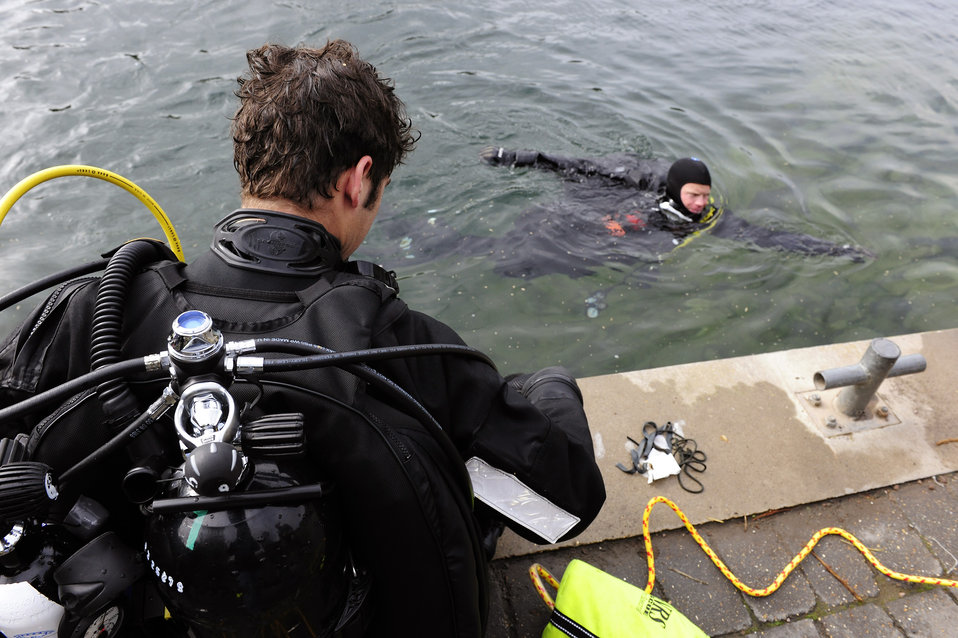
Pararescuemen train to save lives

Pararescuemen from the 56th Rescue Squadron train for subsurface search, rescue and recovery Oct. 5, 2010, at Stoney Cove, England. The pararescuemen trained in a controlled environment allowing them to focus on their curriculum without being disturbed.